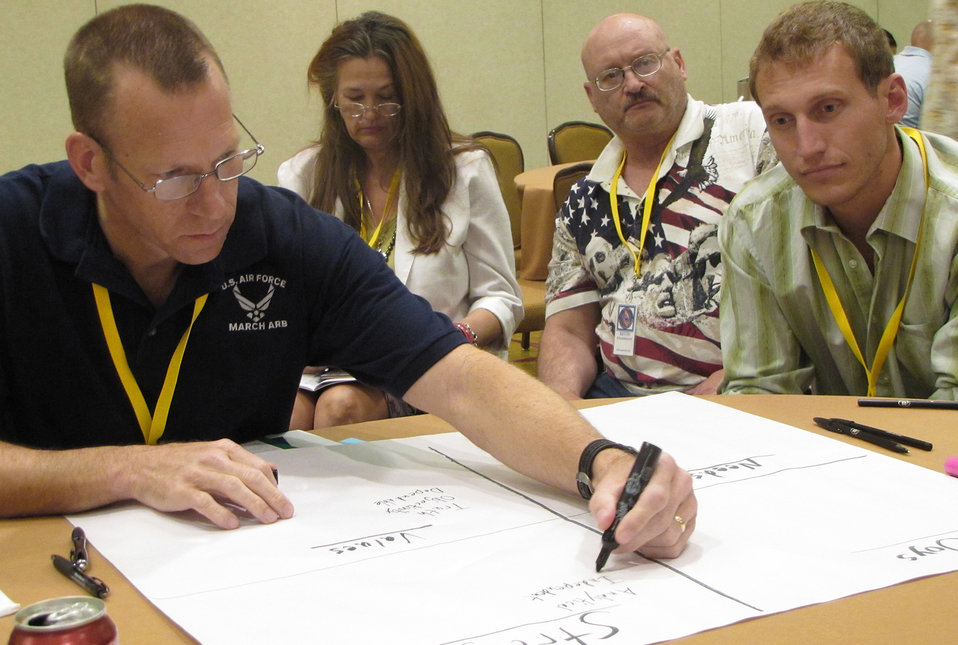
Deployers, families tackle issues in Phoenix

U.S. Air Force Reservists and their families learn more about their personalities by taking a Four Lenses class during the western region Yellow Ribbon Program event April 15, 2011, in Phoenix. Much of the information presented over the weekend went back to the attendee's Four Lenses personality type and created a foundation from it.